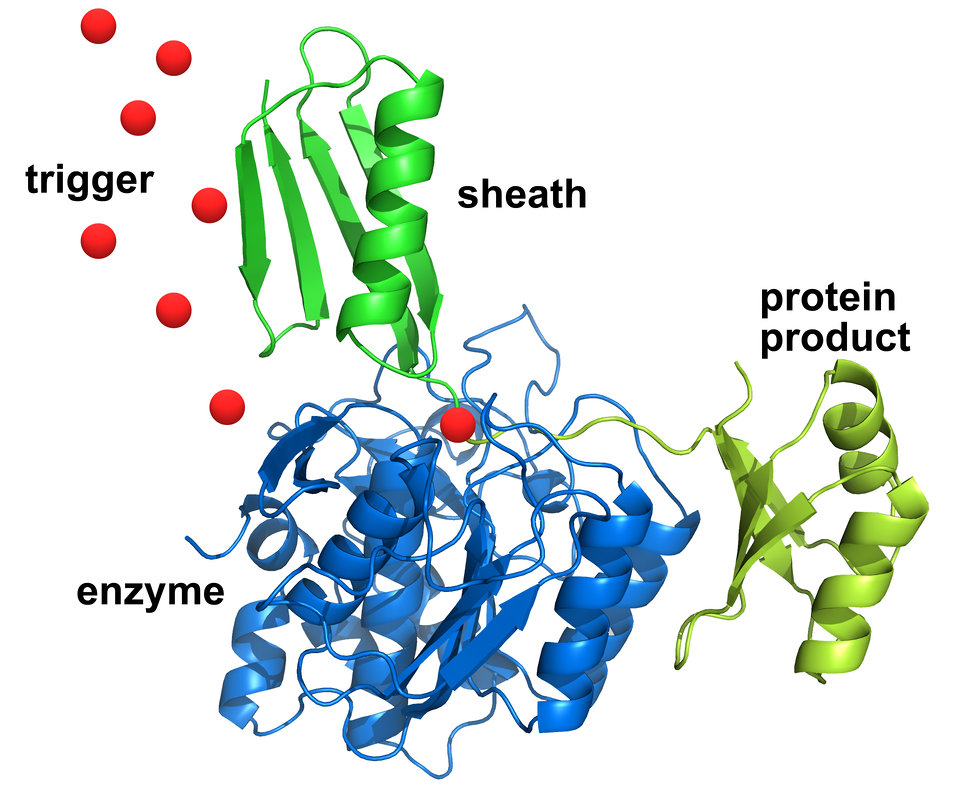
Biochemical; Protein Purification Challenge

The sheath (in green at top), with the desired protein linked to it (in yellow at right), first sticks to the engineered enzyme (in blue at bottom left) - allowing impurities and other proteins to be washed away. Then an infusion of fluoride acts as a trigger, causing the enzyme to cut away the desired protein (at the point where the sheath and protein connect), which can be collected in a pure state. The sheath can then be washed away and the process repeated.